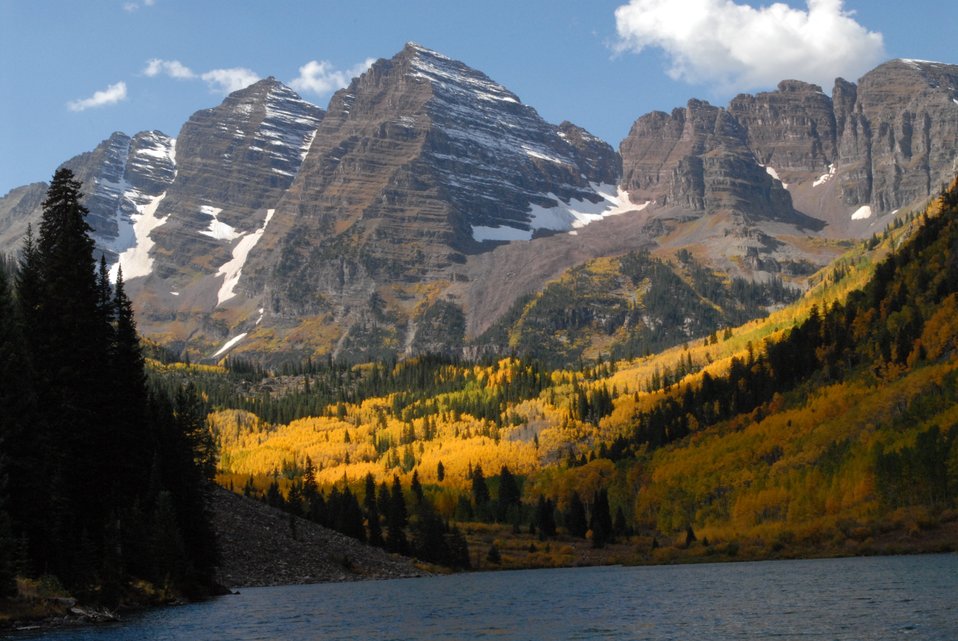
Maroon Lake at peak fall color in late September 2011 on the White River National Forest in Colorado.Nestled in the heart of the Rocky Mountains, the 2.3 million-acre White River National Forest is the top recreation forest in the nation. Home to world-renowned ski resorts and the birthplace of Wilderness, the White River has something to offer every outdoor enthusiast.